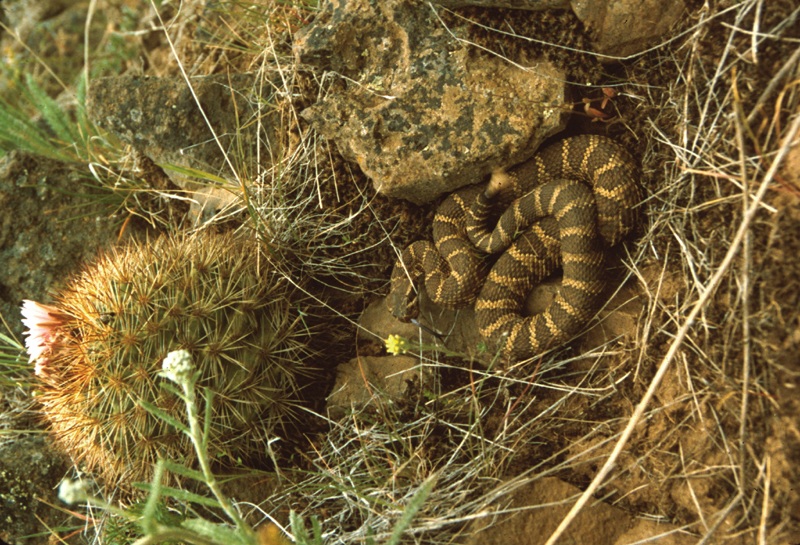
Rattlesnake Cottonwood Field Office Lower Salmon River UCSC Upper Columbia-Salmon Clearwater District